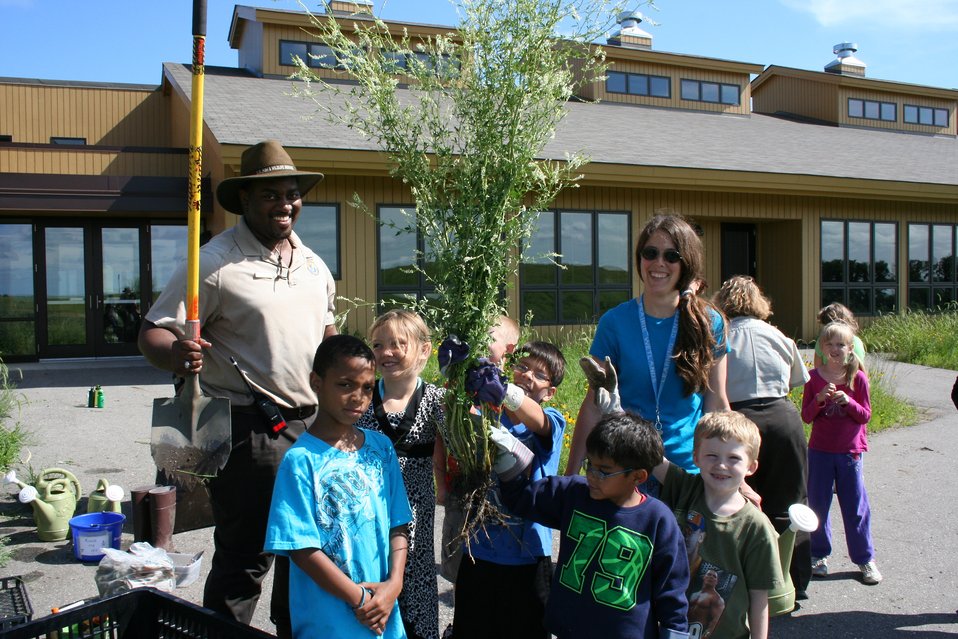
Lionel D Grant and students

Lionel D. Grant, (left), and students show off invasive white clover that they pulled at the Prairie Wetlands Learning Center in Minnesota. Grant, a Student Career Experience Program (SCEP) hire with the U.S. Fish and Wildlife Service, worked as a park ranger at the center in summer 2011.